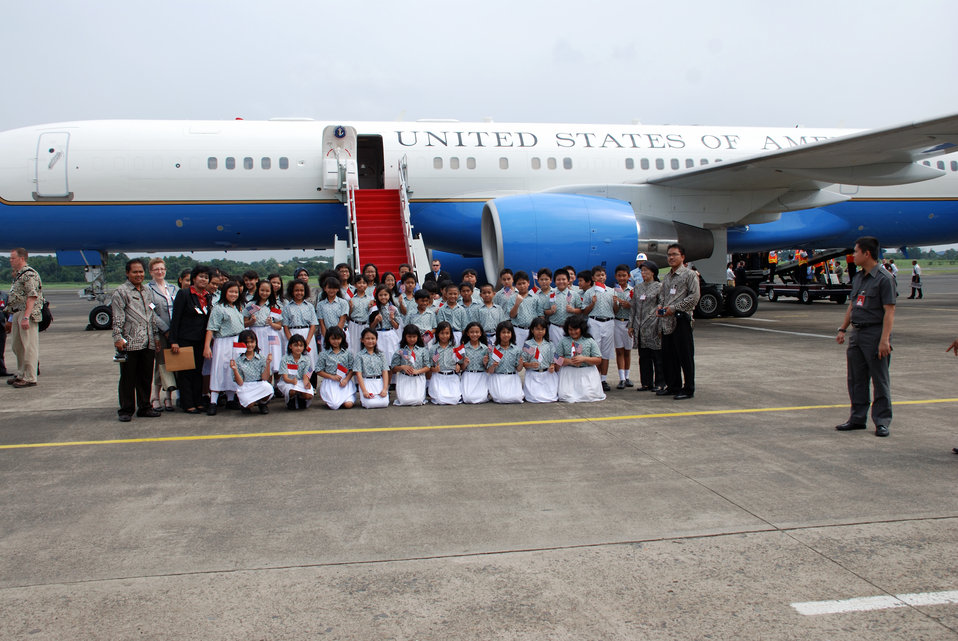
Behind the Scenes: Indonesian Students Prepare for Secretary Clinton's Arrival

Students and teachers from Menteng Elementary School No. 1 Student
Choir pose in front of the plane used by U.S. Secretary of State Hillary Rodham Clinton at Halim Airport after
Secretary Clinton has left the airport in Jarkarta, Indonesia during her visit February 18, 2009.